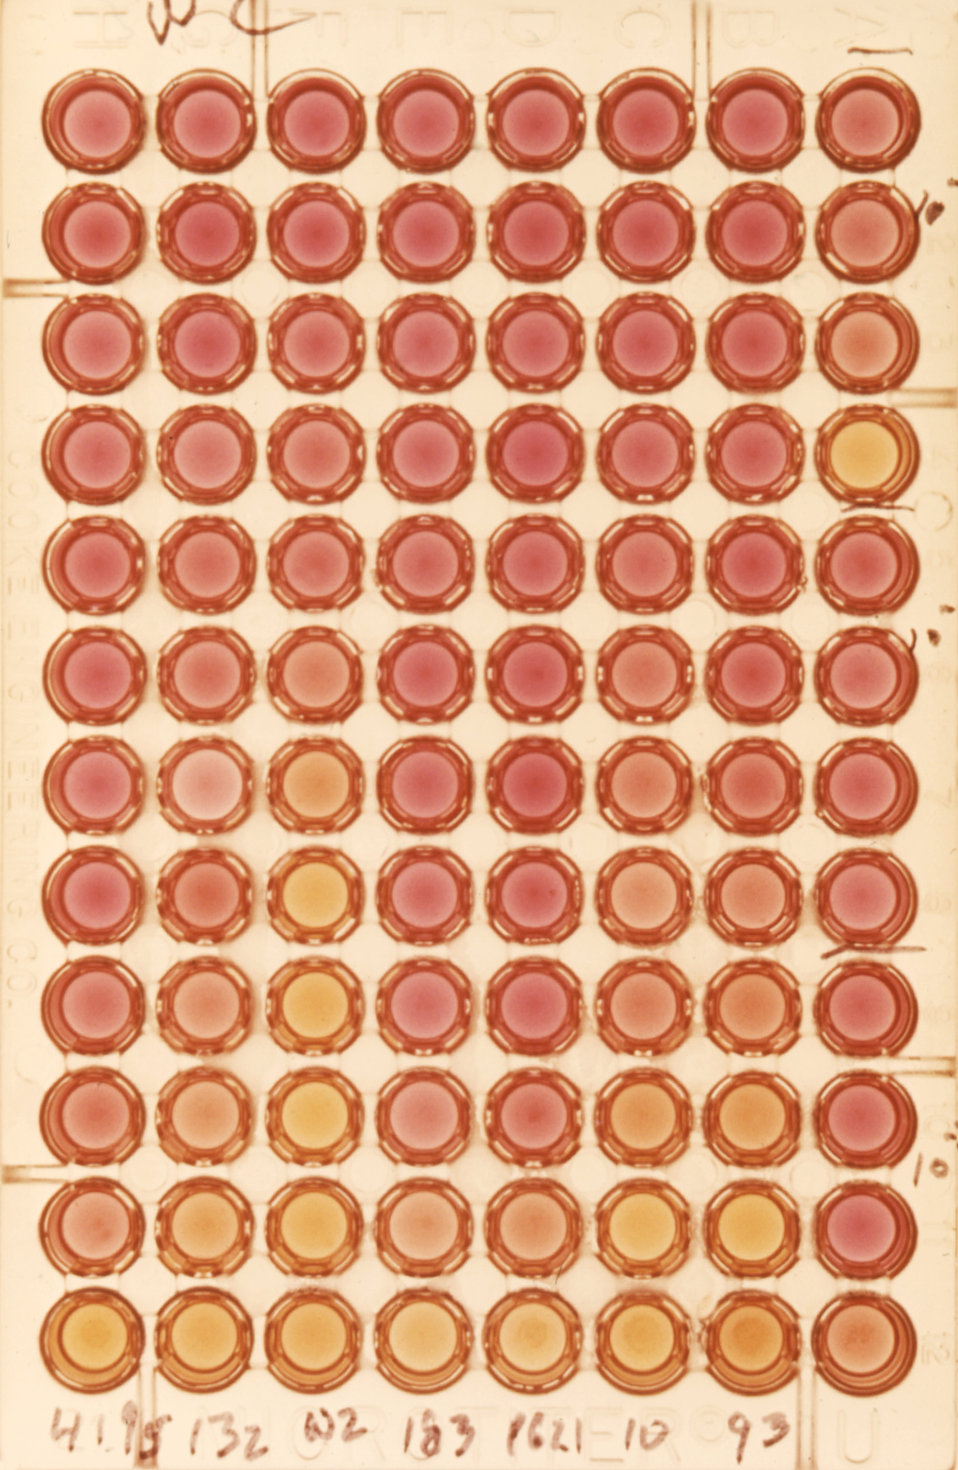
This was a metabolic inhibition test for Mycoplasma hominis, strain W2 versus another strain-immune sera.